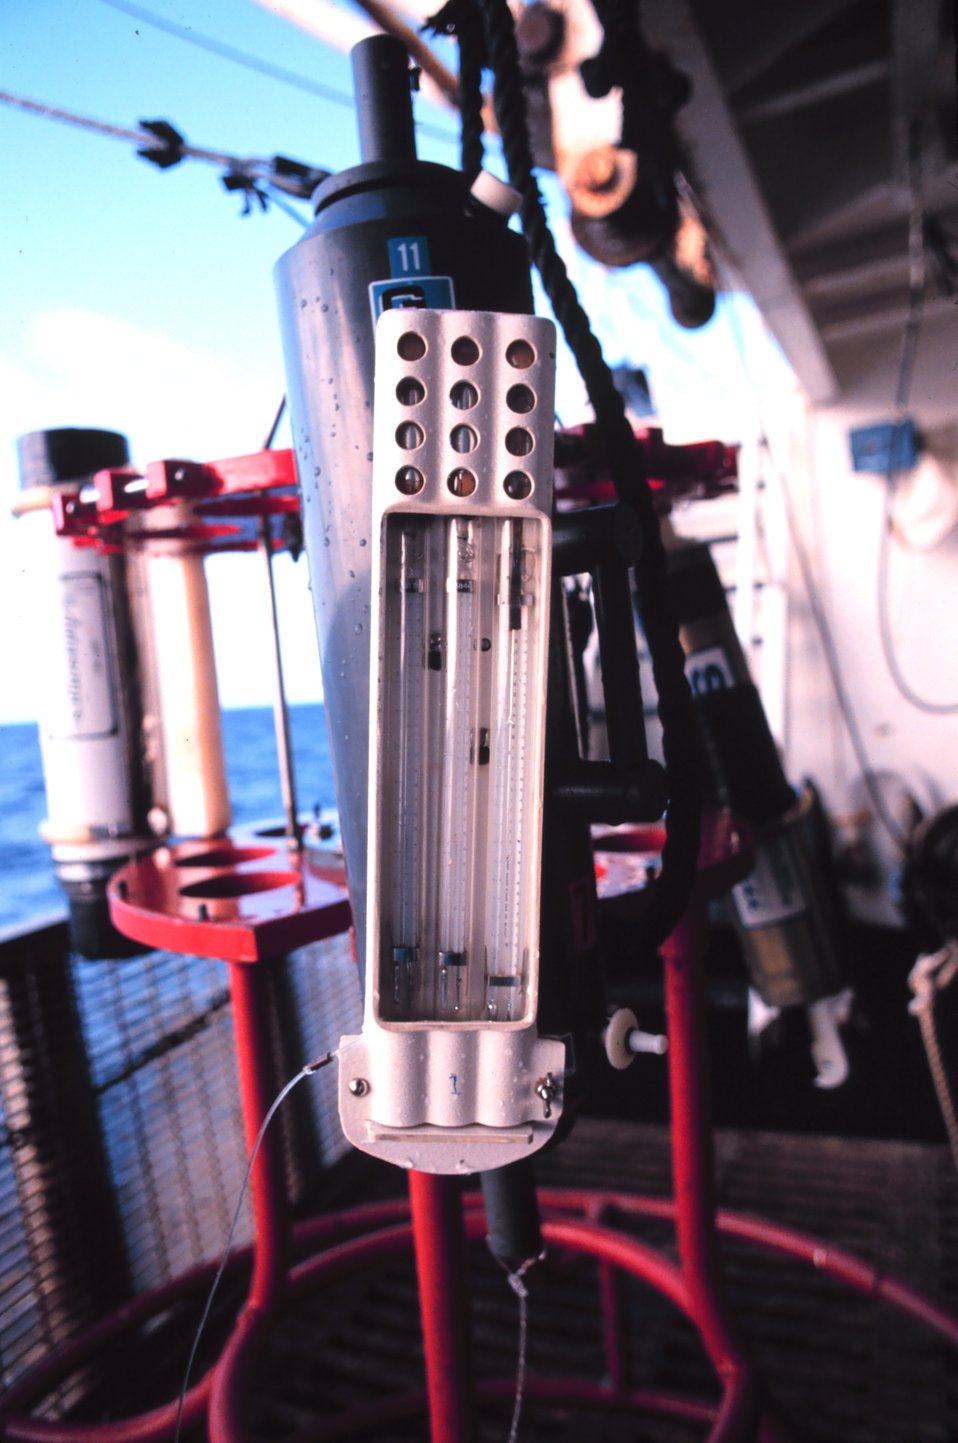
Temperature sensors on CTD instrument on MILLER FREEMAN.